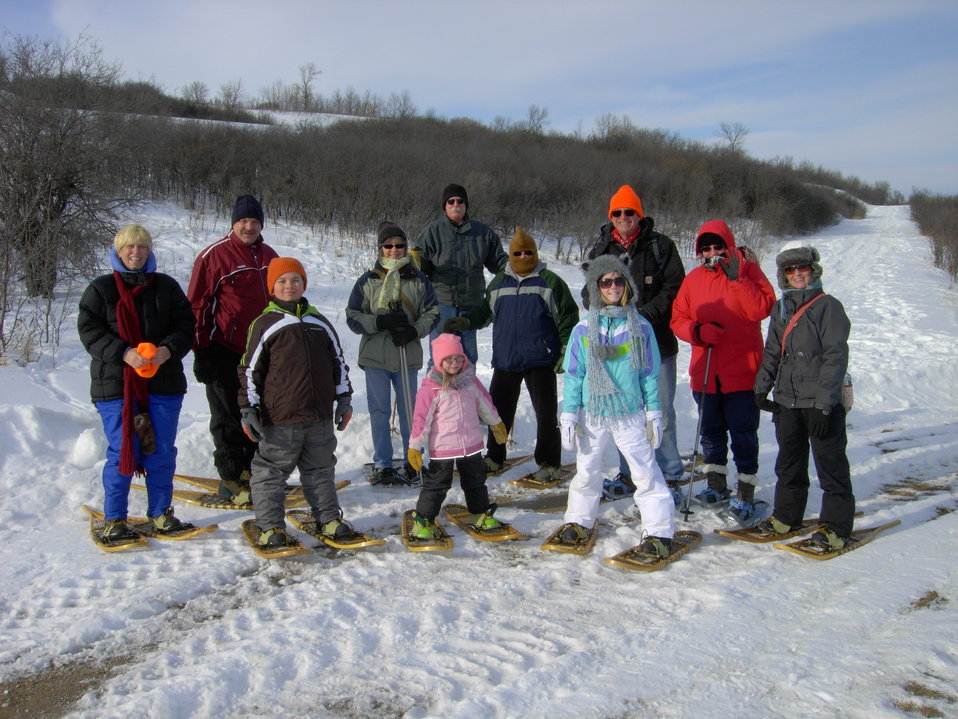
Let's Go Snowshoeing!

Snowshoeing is one of the many seasonal activities available at Des Lacs National Wildlife Refuge in North Dakota. Participants in the snowshoeing program, 'Let's Go Snowshoeing!' ranged from age 5 to 67, encouraging people of all ages to use and enjoy the outdoors.